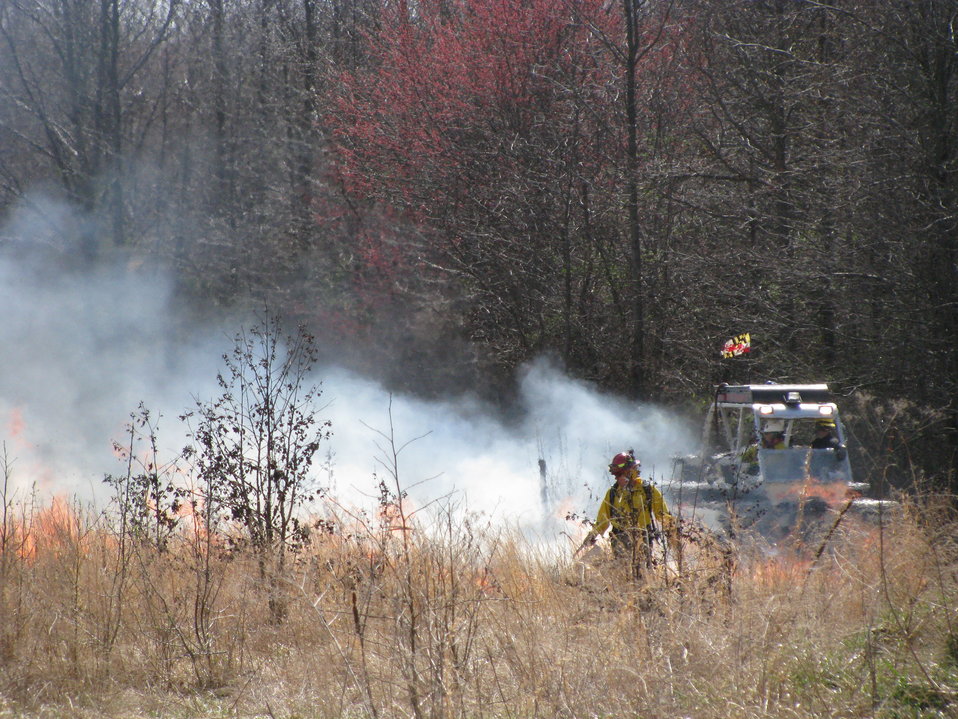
Igniting and Holding

Laurel, Maryland, April 14, 2012: A firefighter lights a controlled burn in a field followed by a Marshmaster, which helps keep the fire within control lines. The burn, at Patuxent Research Refuge, was to maintain native grasslands, remove woody vegetation, and control invasive species such as Korean Lespedeza.